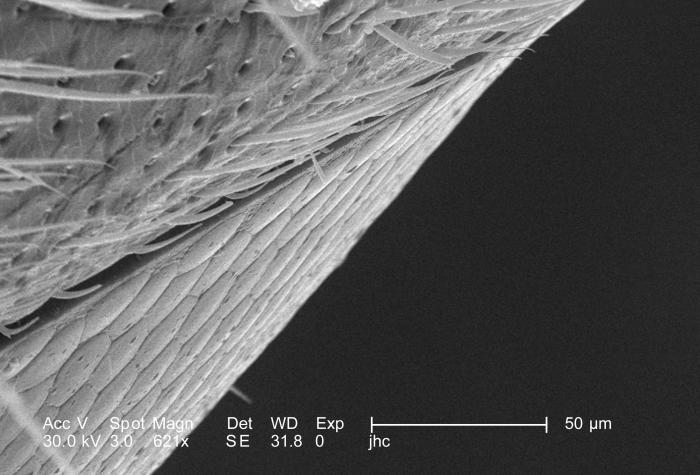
Under a moderate magnification of 621X, this scanning electron micrograph (SEM) depicted the surface of the left compound eye (background) of an unidentified hornet found in the suburbs of Decatur, Georgia. At this point, the eye was attached to the 'setae'-covered head. This eye was one of a pair, which along with other sensorial structures such as these hair-like 'setae', provided the hornet with data indicative of changes encountered in its environment such as chemical, thermal, and tactile queues.